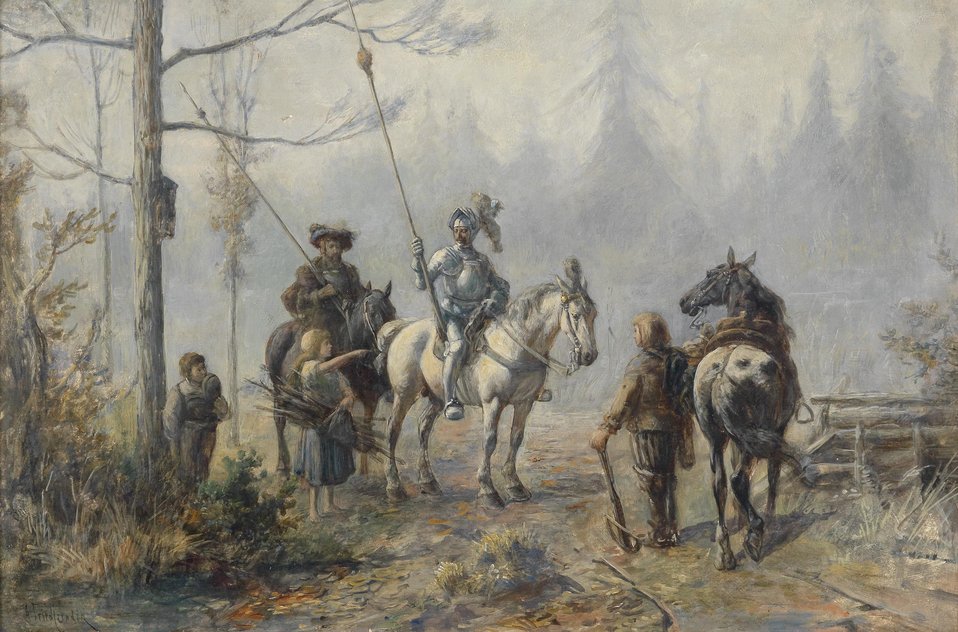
Verirrt (Ritter fragt Reisigsammler nach dem Weg), signiert A. Friedländer, Öl auf Holz, ca. 31 x 44 cm